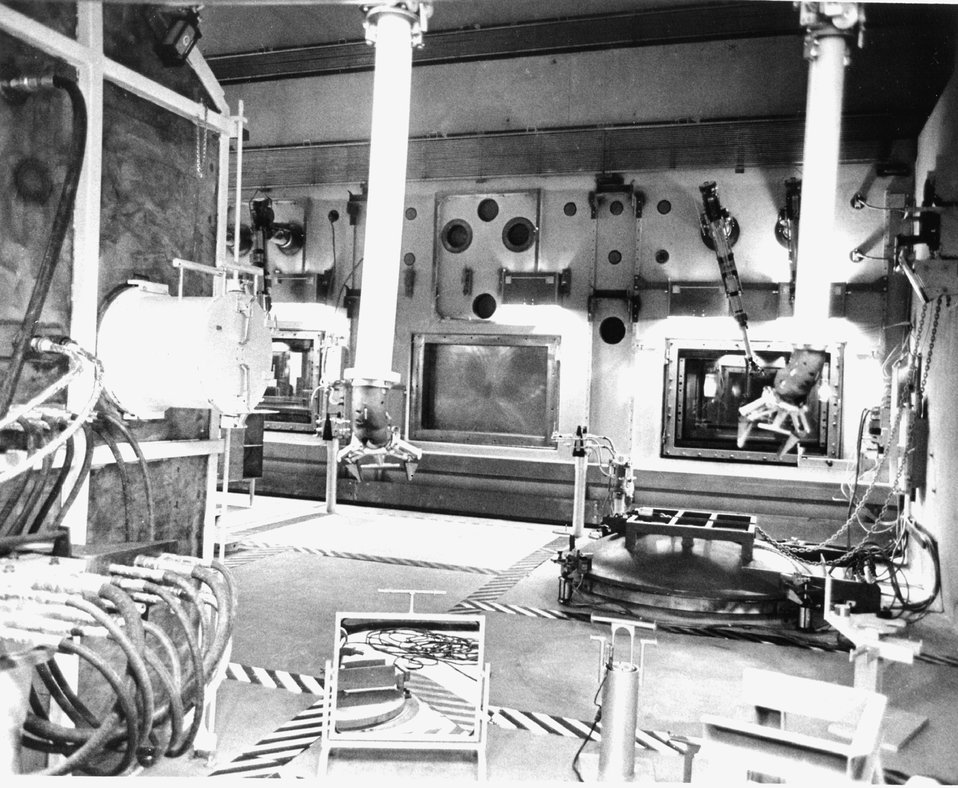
Radioactive materials enter the cell through the circular port in the floor. The materials are then disassembled for examination and analysis by use of remote control manipulators. c. 1973